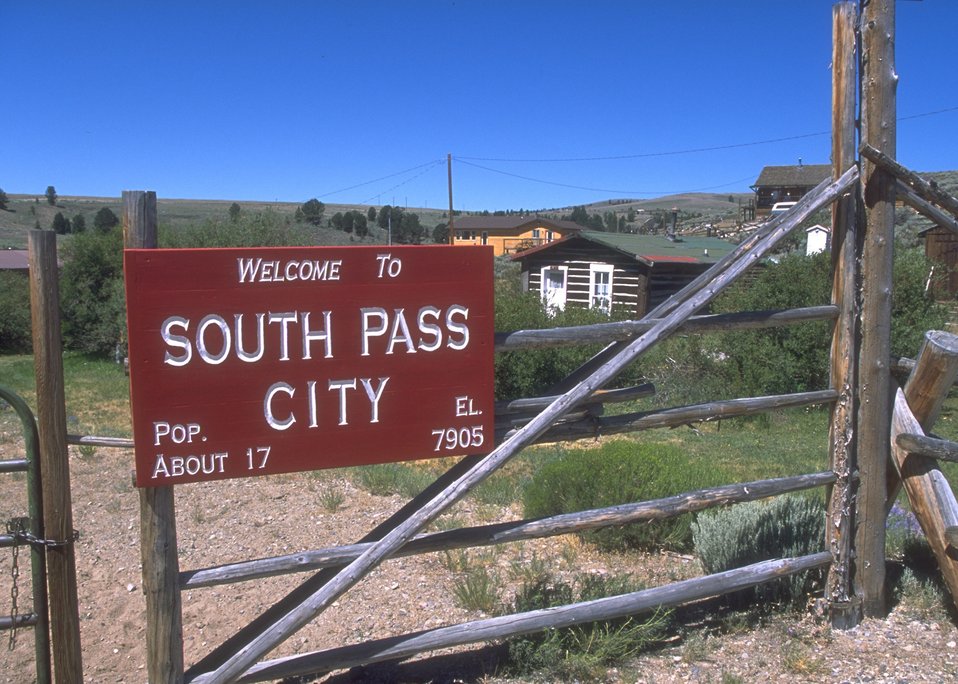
Sign at South Pass City, Lander Field Office.